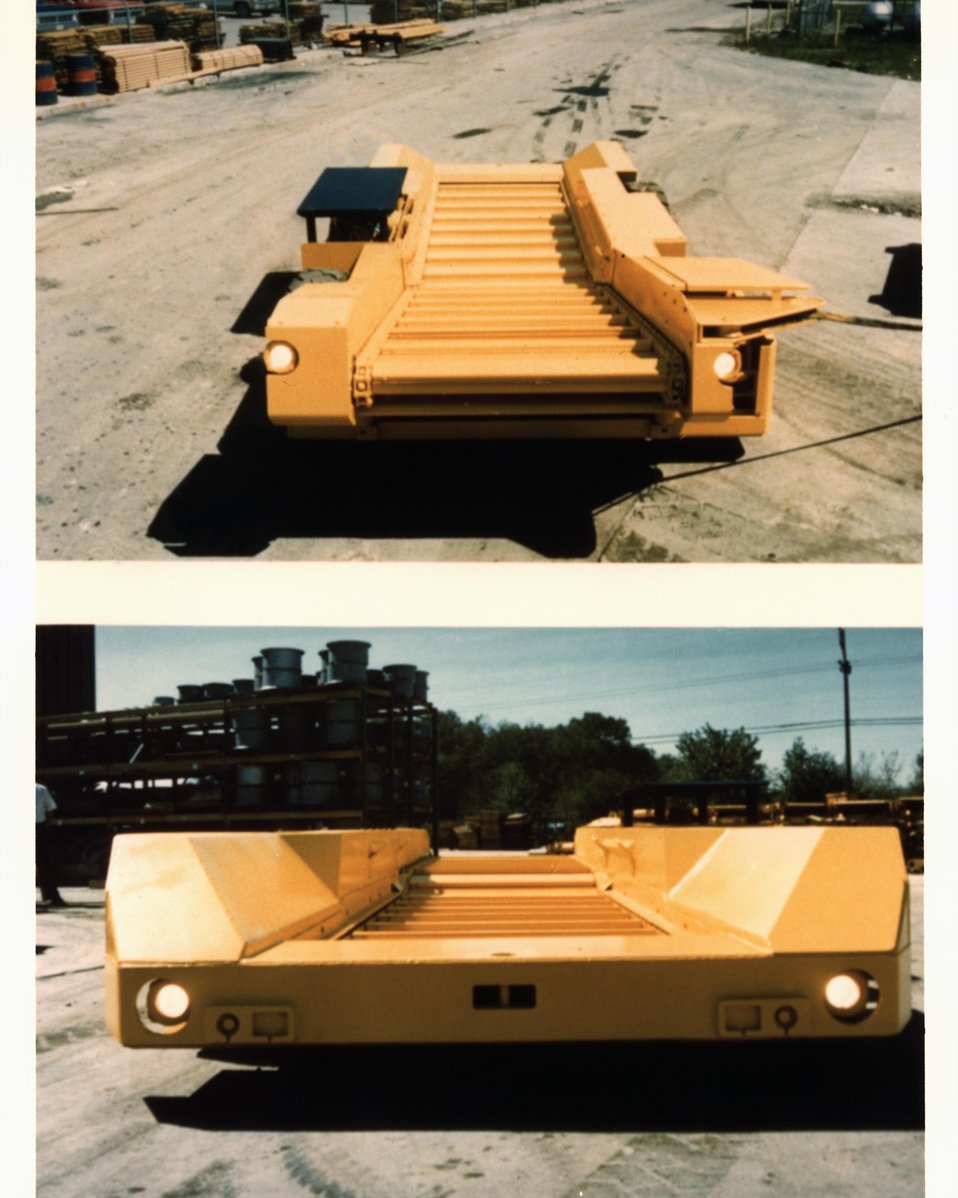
TWO VIEWS OF NEW PROTOTYPE SHUTTLE CAR DESIGNED AND BUILT TO CARRY MORE COAL PAYLOAD PER TRIP CYCLE

IT IS NOW BEING DEMONSTRATED IN AN UNDERGROUND COAL MINE IN WEST VIRGINIA.